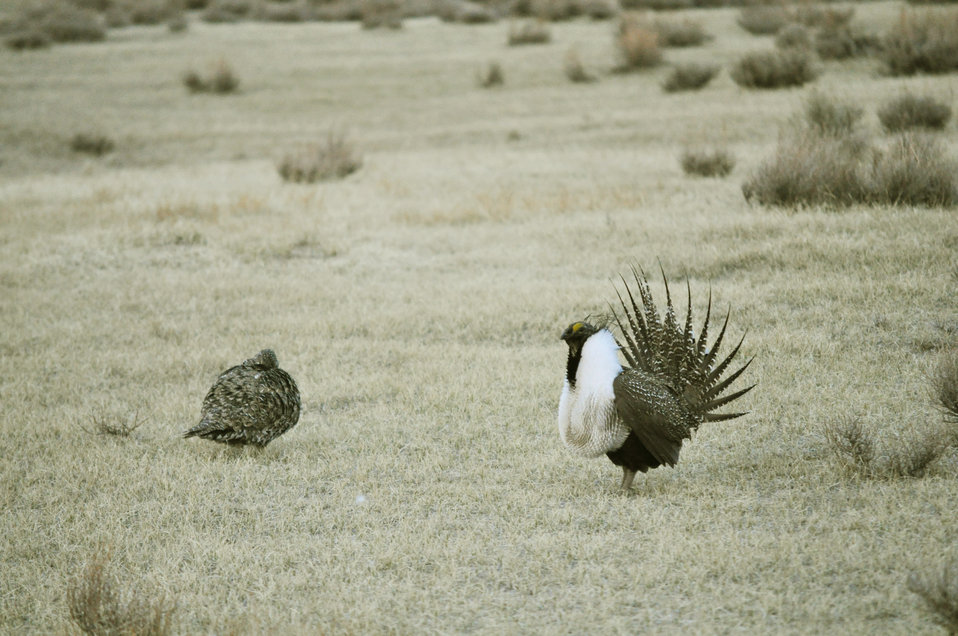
Greater Sage-Grouse

Male greater sage-grouse struts for female at lek (dancing or mating grounds) near Bodie, California.